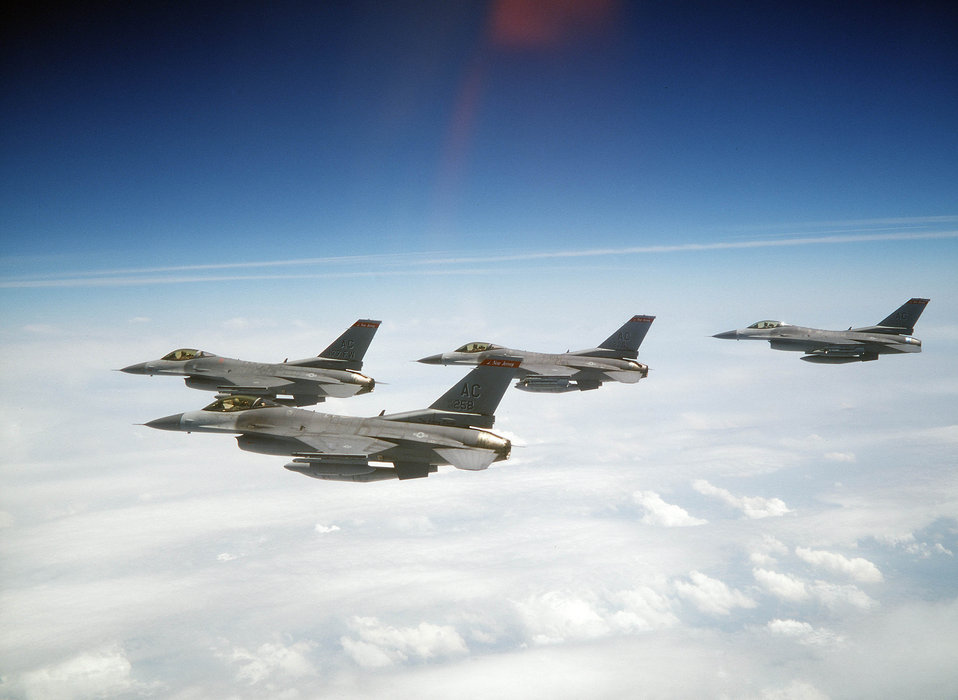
Flock of Falcons

FILE PHOTO -- A formation F-16C Fighting Falcons on a flight from Tyndall Air Force Base, Fla., to Atlantic City International Airport, N.J. The F-16 Fighting Falcon is a compact, multi-role fighter aircraft. It is highly maneuverable and has proven itself in air-to-air combat and air-to-surface attack. It provides a relatively low-cost, high-performance weapon system for the United States and allied nations.